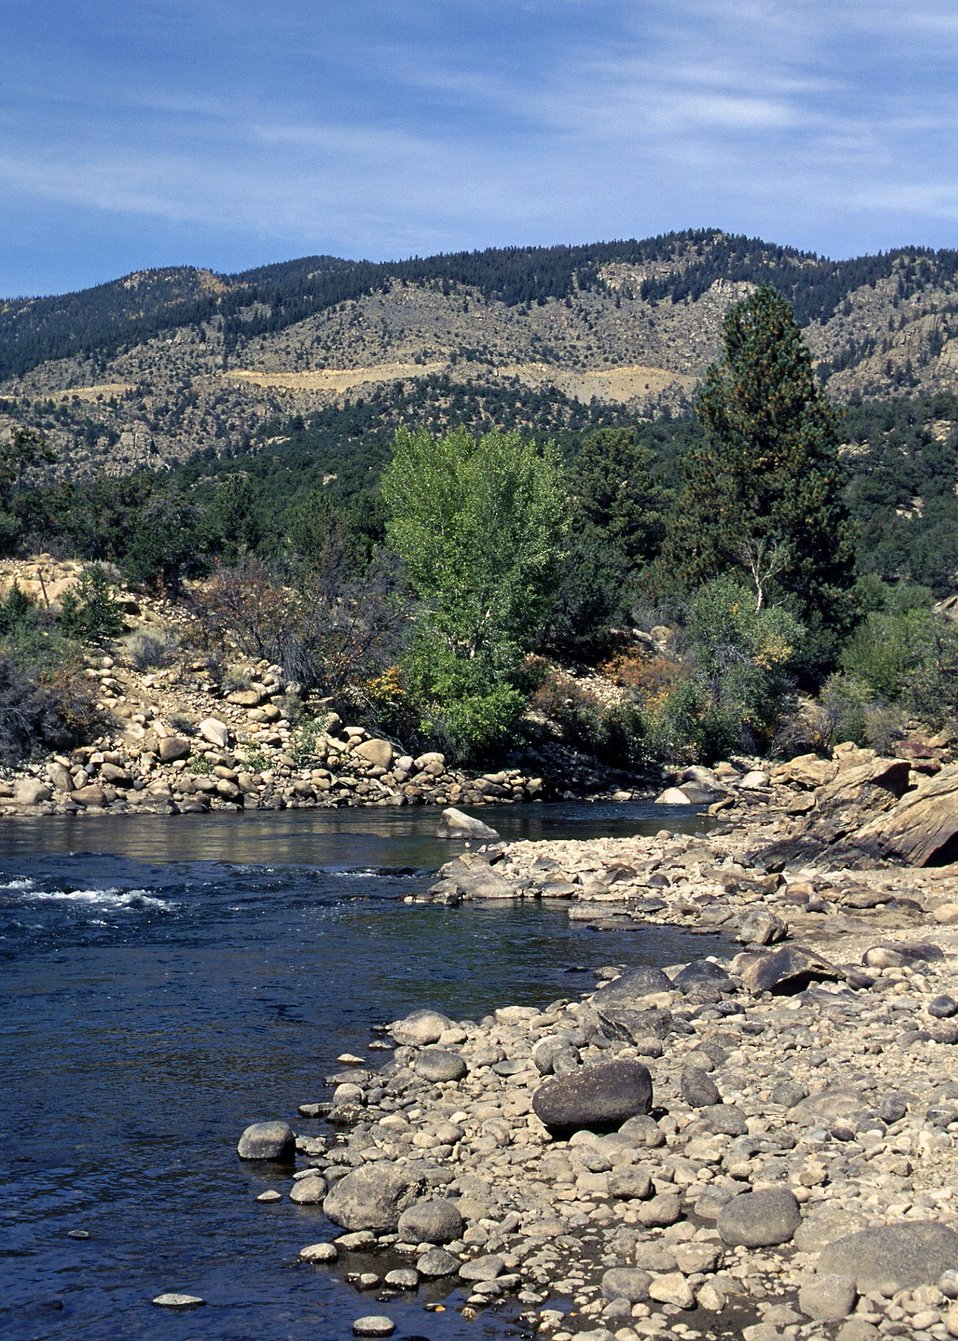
Arkansas River